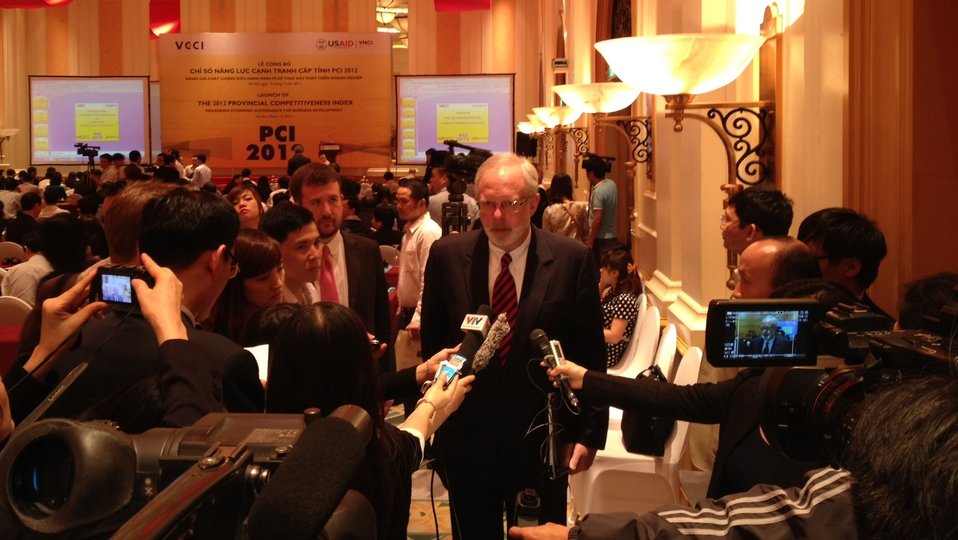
U.S. Ambassador David Shear speaks to journalists at the Provincial Competitiveness Index Launch, March 14, 2013

Hanoi, March 14, 2013